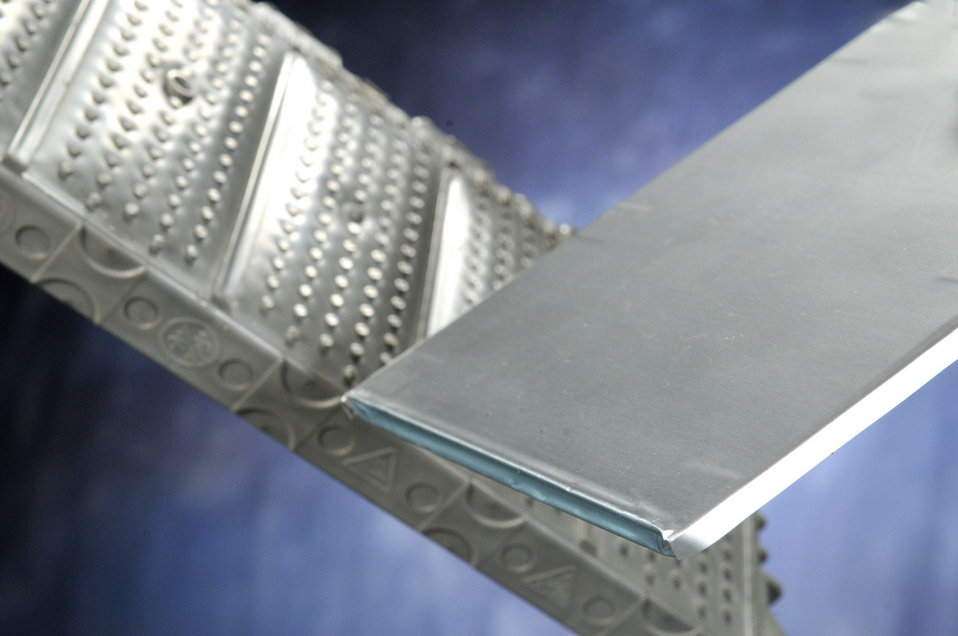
The newest generation of lithium-ion battery (foreground) has an energy density three times that of the in today's electric car (background).

The lithium-ion battery technology will be a part of a new Energy Frontier Research Center (EFRC) devoted to energy storage research. The new facility will be called Center for Electrical Energy Storage (CEES) will bring together a team of 17 world-class researchers from Argonne, Northwestern University and the University of Illinois at Urbana-Champaign.